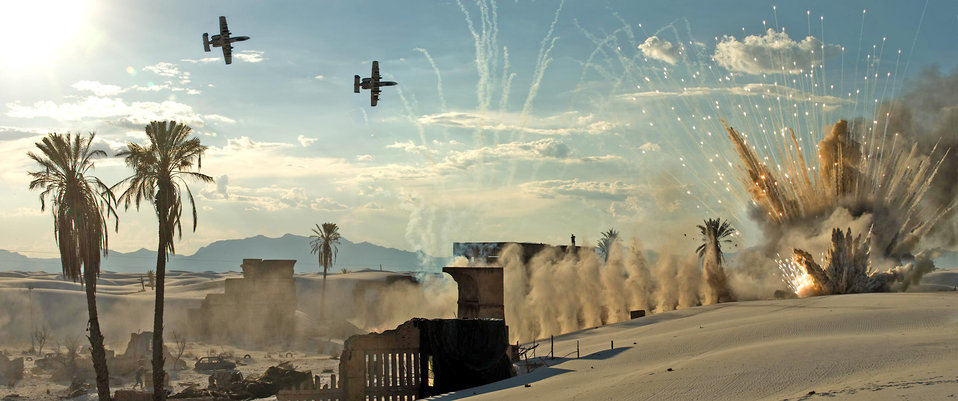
Tinker Airmen make mark in 'Transformers: Revenge of the Fallen'

A scene from